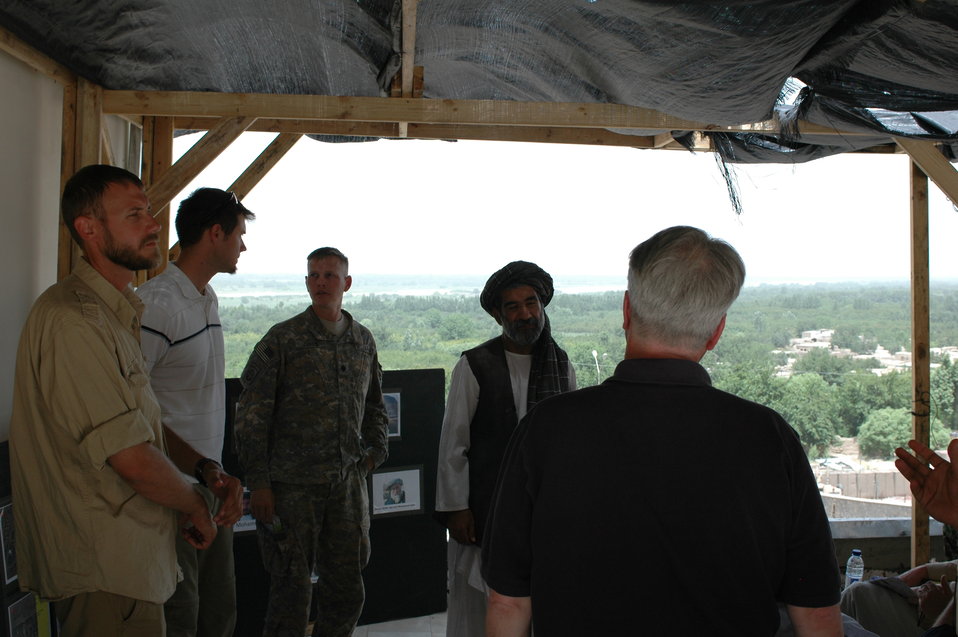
CODEL Berman